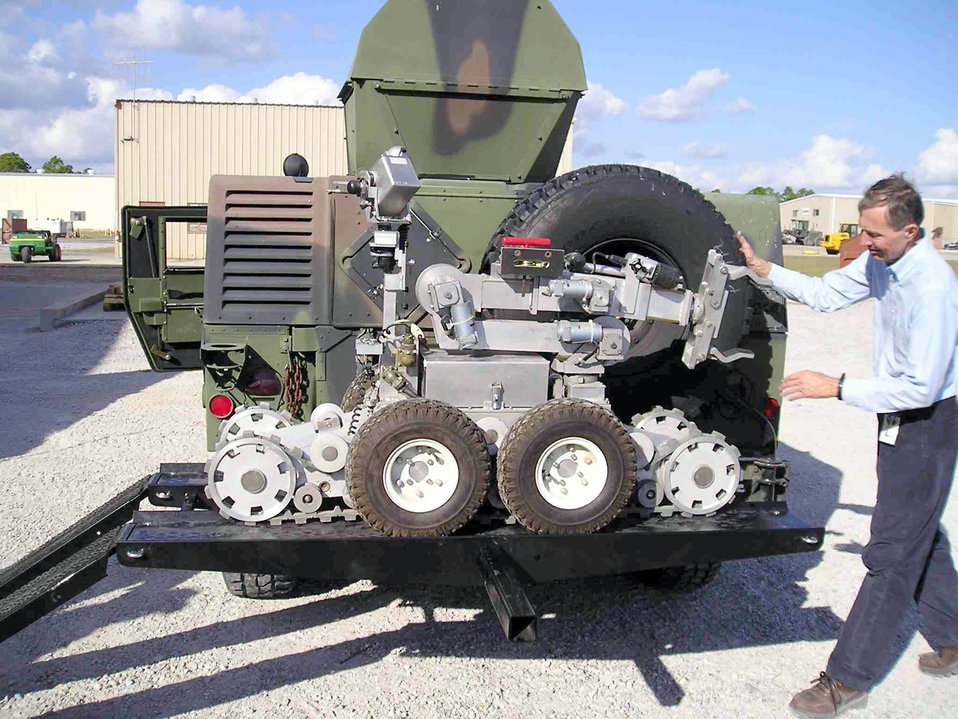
Making robot bumper mounts

TYNDALL AIR FORCE BASE, Fla. -- Dr. Arthur Morton inspects the ramp to see if it meets clearance requirements. Dr. Morton works at the materials and manufacturing directorate's force protection branch here.